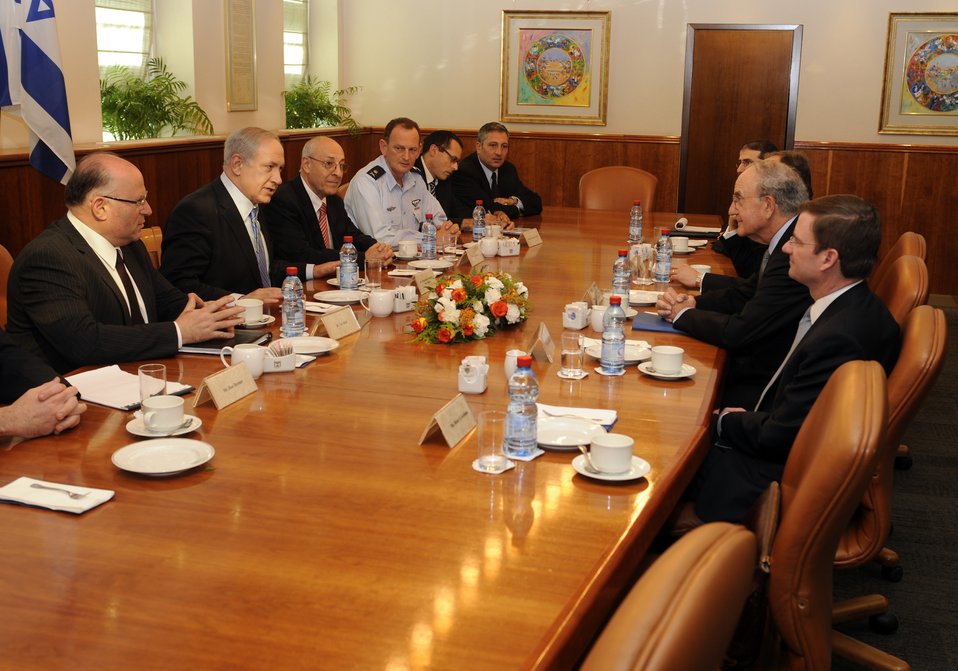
Special Envoy Mitchell Meets With Israeli Prime Minister Netanyahu

Special Envoy for Middle East Peace George Mitchell meets with Israeli Prime Minister Binyamin Netanyahu at the Prime Minister’s office, Jerusalem, May 5, 2010.